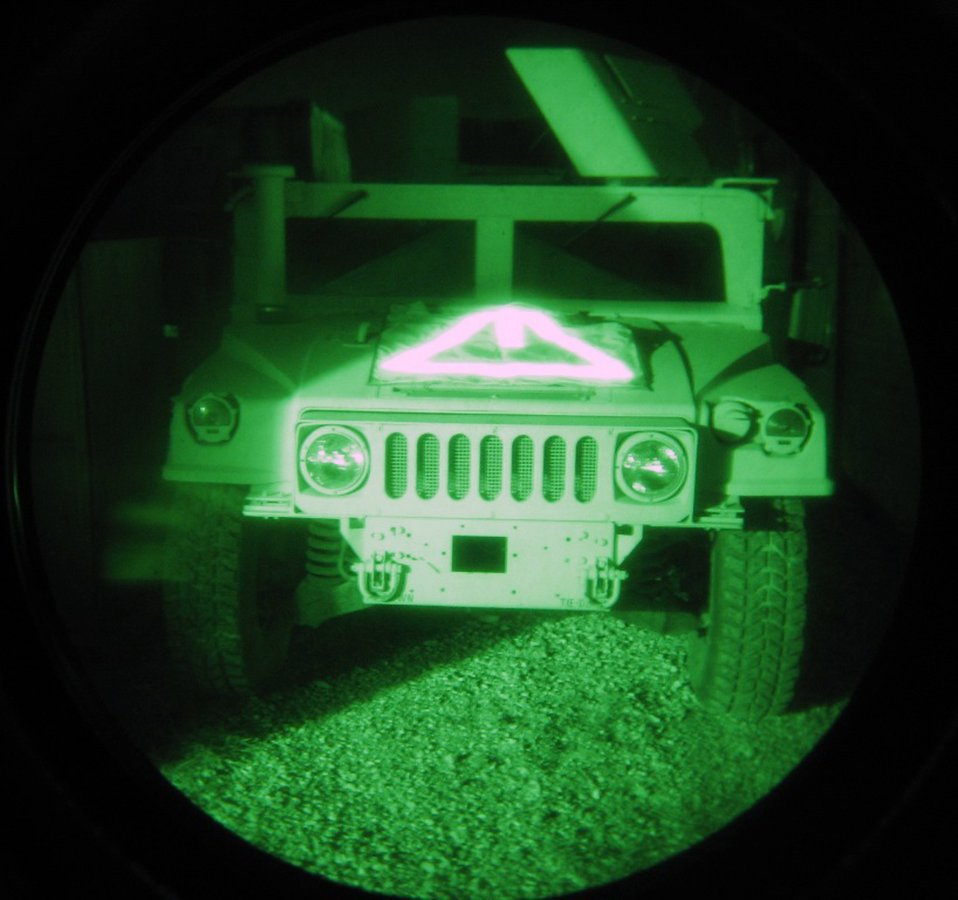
Air Force develops friend vs. foe identification system

A military vehicle marked with Target Recognition Operator Notification I (small strip in the center) and TRON III is shown through night-vision googles in January near Bagram Air Base, Afghanistan. The identification technology was developed by Air Force Research Laboratory officials in collaboration with the civilian industry to support joint warfighters.